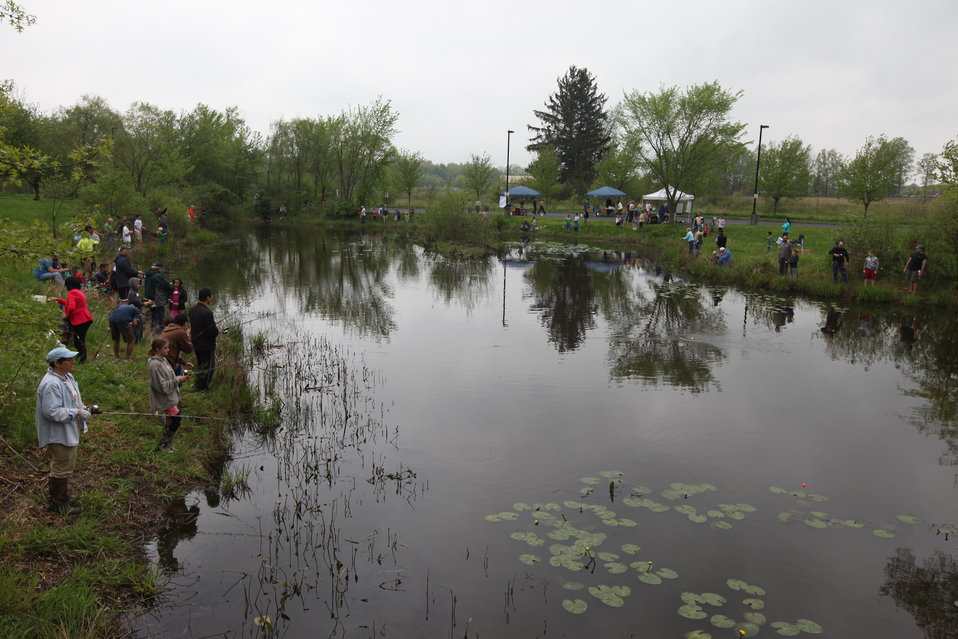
Fishing Derby